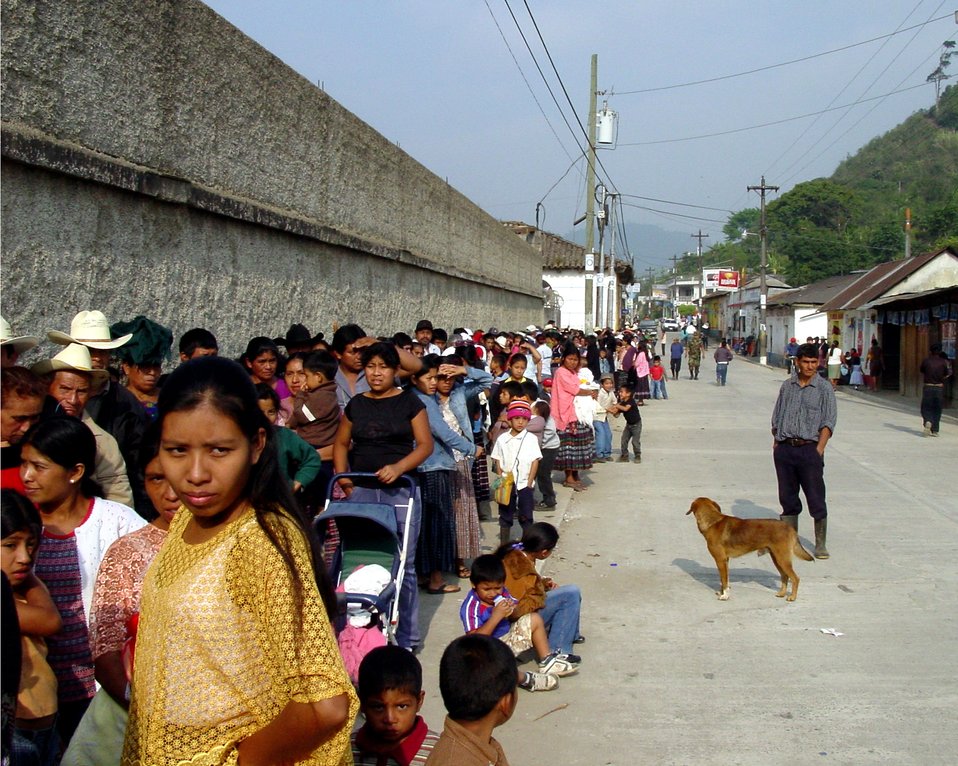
Air Force medics provide medical relief in Guatemala

Guatemalan citizens line up around the block to receive some much needed medical attention. Thirteen medical professionals from Air Force Space Command bases saw more than 8,000 Guatemalan patients during a 10-day humanitarian mission. Most of the patients stood in line for more than 12 hours, awaiting much needed medical care.